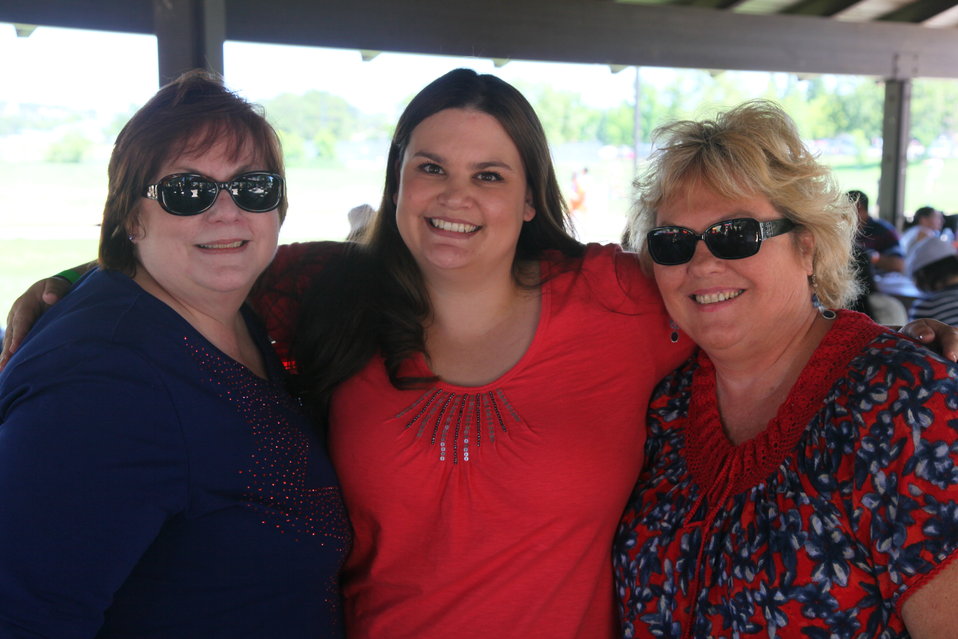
2011 Annual Picnic